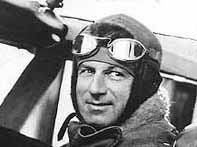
Gen. William

Early Years -- Gen. William "Billy" Mitchell